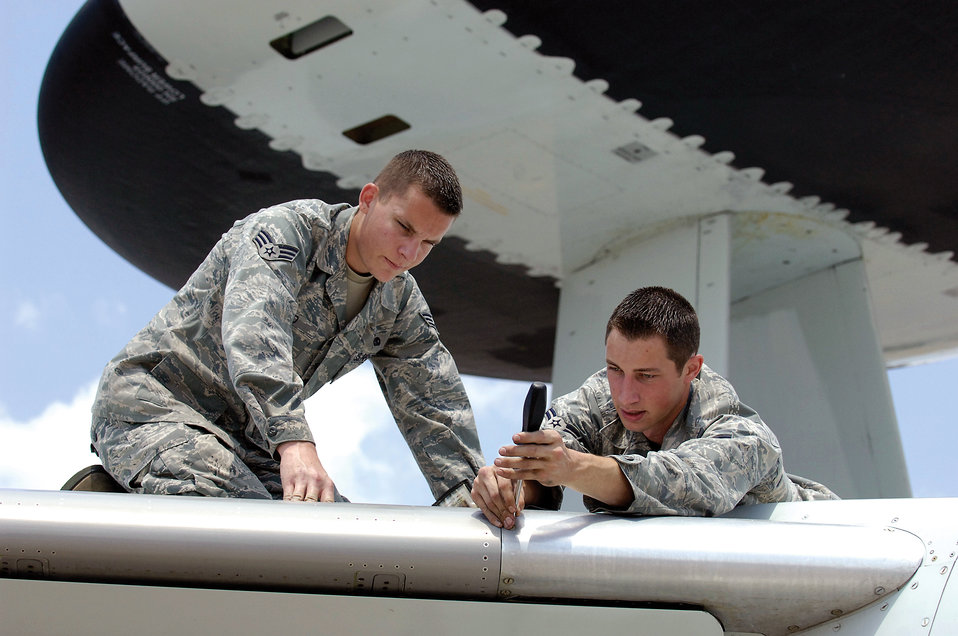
Tightening it down

Senior Airman Matthew Child (left) and Airman 1st Class Joshua Martin tighten a fastener on the wing of an E-3 Sentry at Tinker Air Force Base, Okla., July 9, 2010. The blistering summer day doesn't matter when it comes to making sure the aircraft is safe and ready to fly. The Airmen are crew chiefs with the 552nd Aircraft Maintenance Squadron.